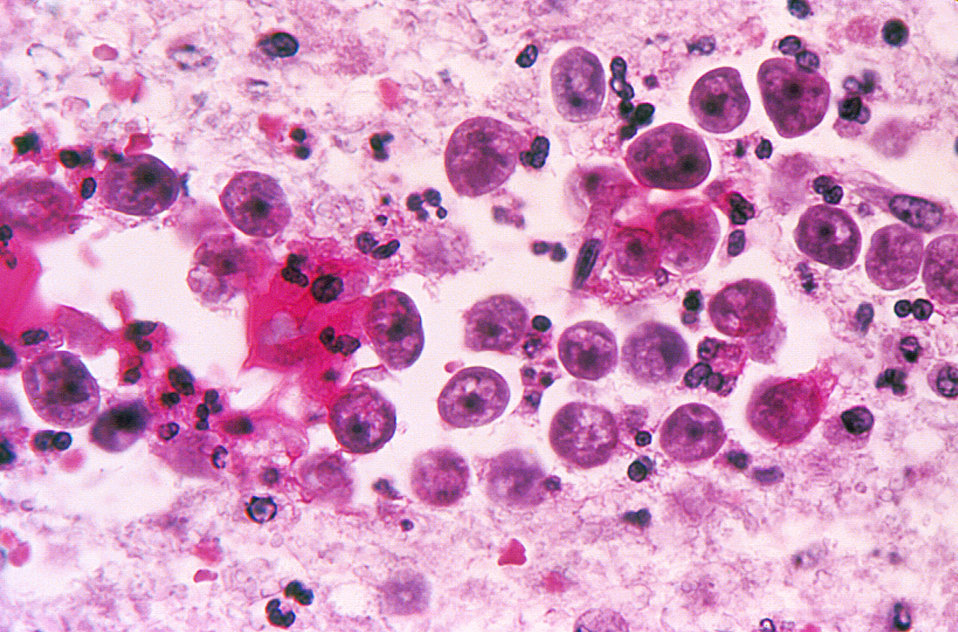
Histopathology of Naegleria infection of brain. Parasite, ameba.